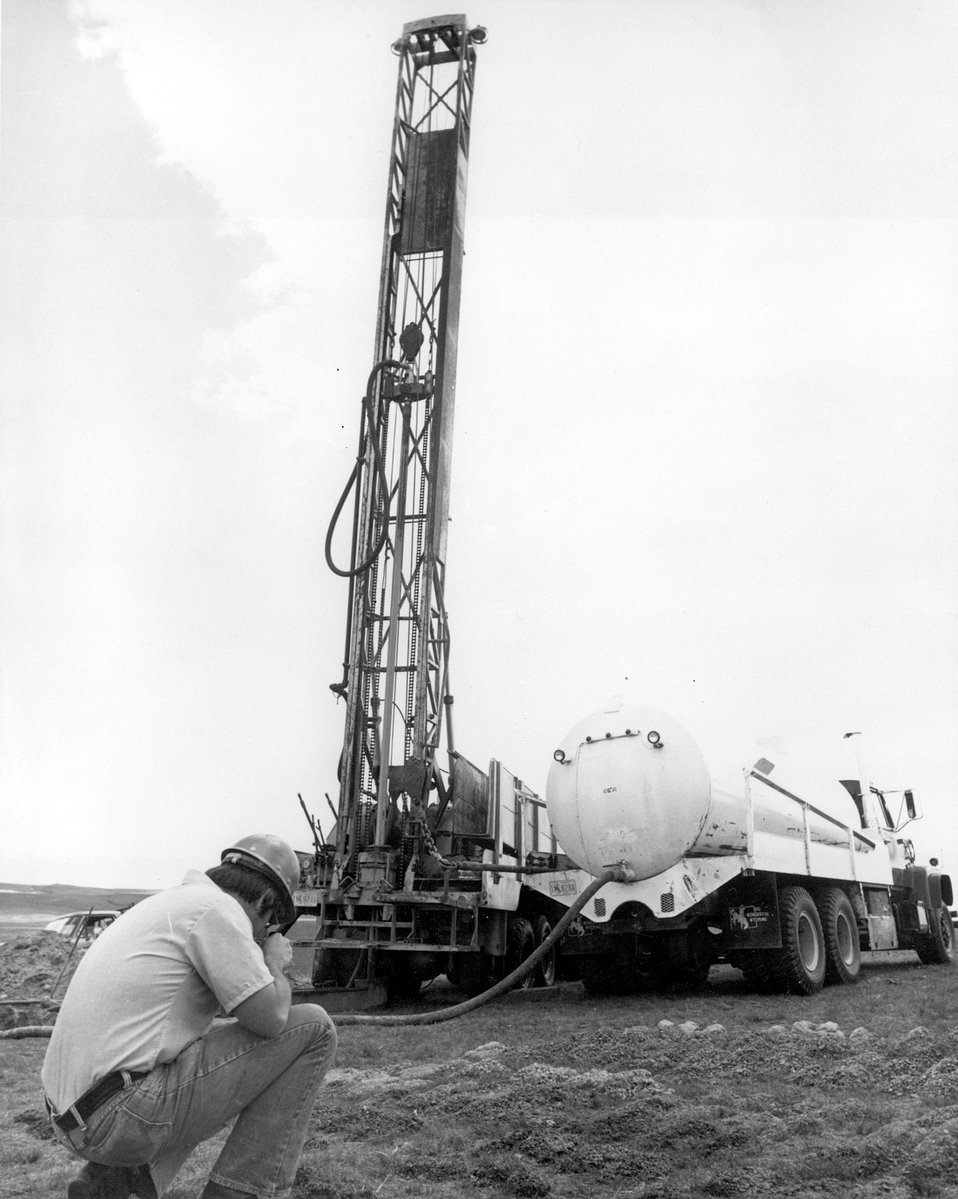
Ed Russell, Conoco uranium exploration geologist, examines cutting samples taken from various levels of strata penetrated by a rotary drill testing for uranium on a Powder River Basin site in Wyoming. c. 1976